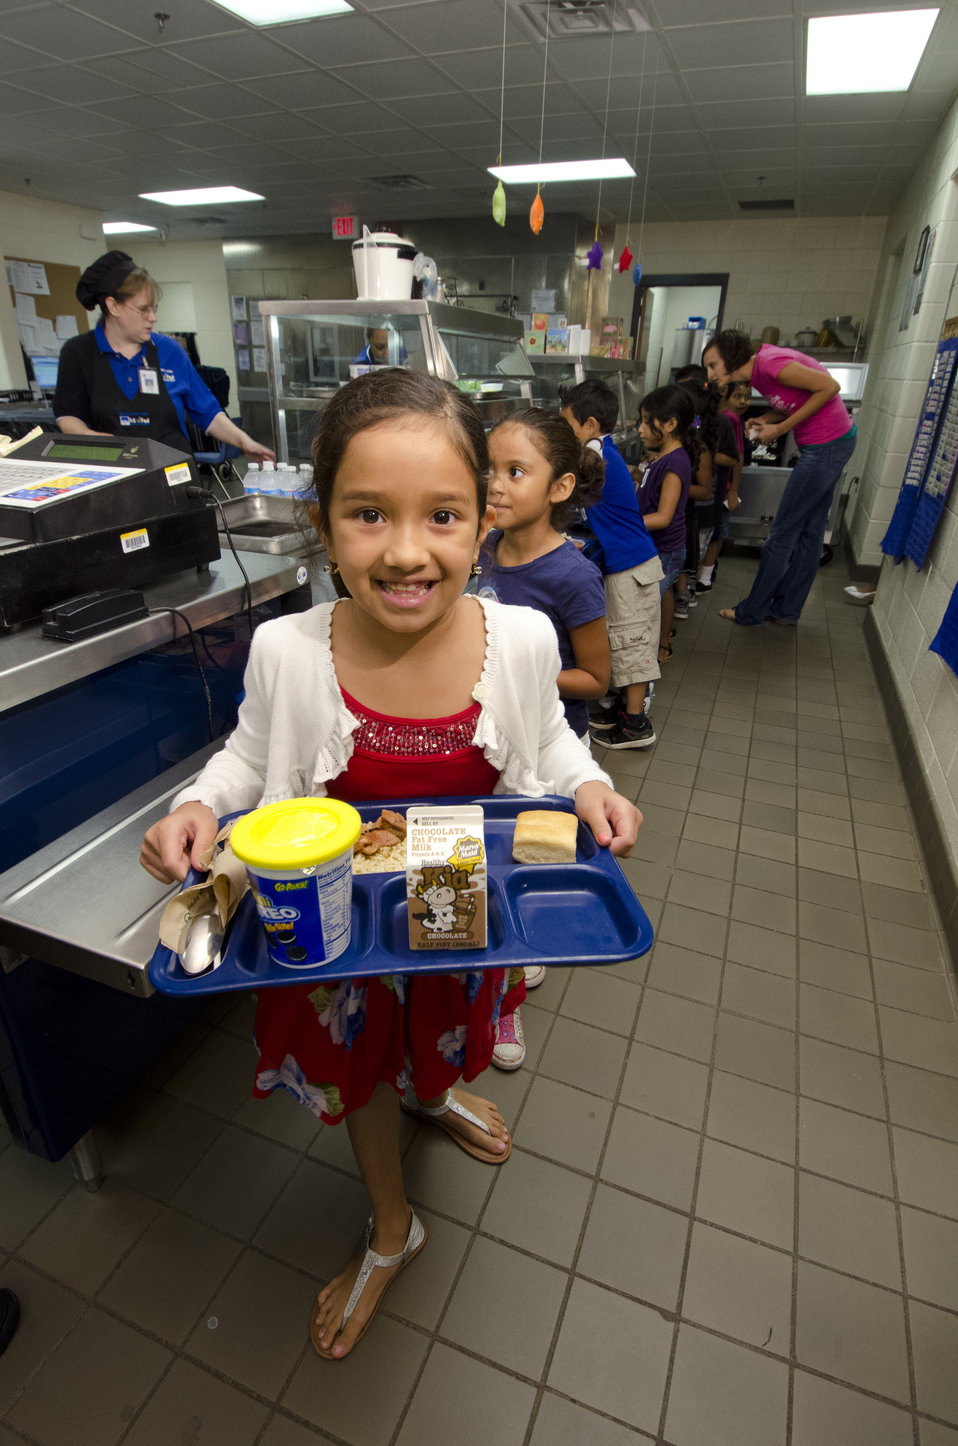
School lunch staff and students enjoy the new school lunch menu created to meet the new standards at the Yorkshire Elementary School in Manassas, VA on Friday, Sept. 7, 2012.